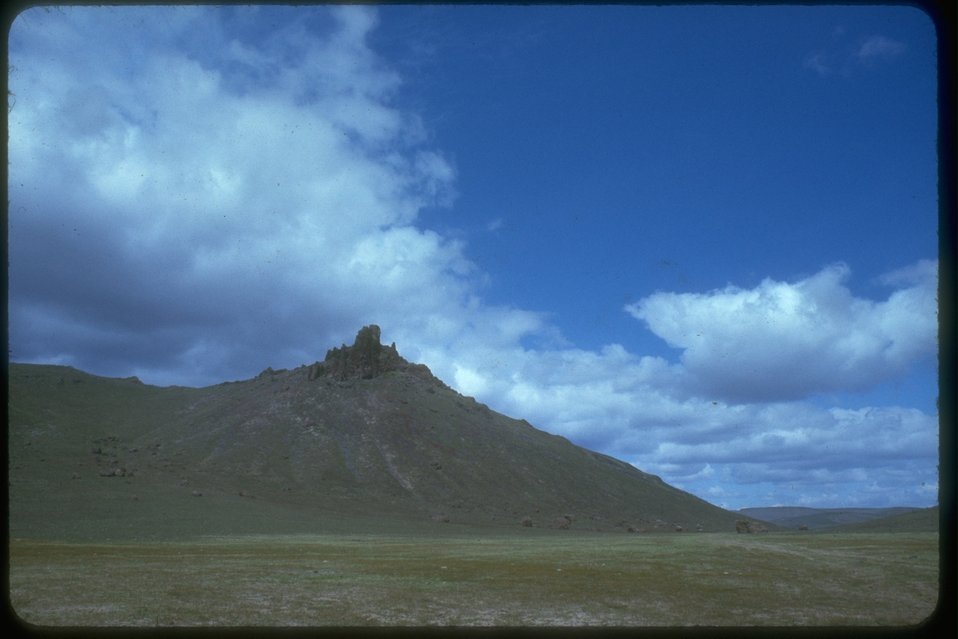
Large rocks and cliffs are set on top of a large hill in the middle of rangeland. There are also more rocks on the slope of the hill and at the base.